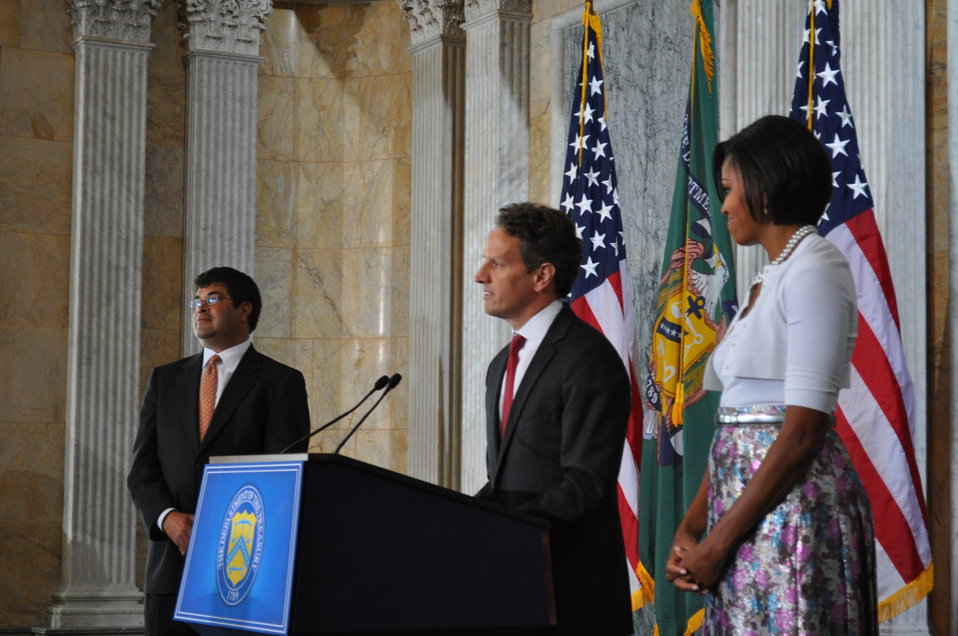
Michelle Obama visits the Treasury Department, 7/7/10

Secretary Geithner thanked Treasury employees for their dedication and introduced First Lady Michelle Obama: 'You have done more in months than most countries do in years,' he told the audience.